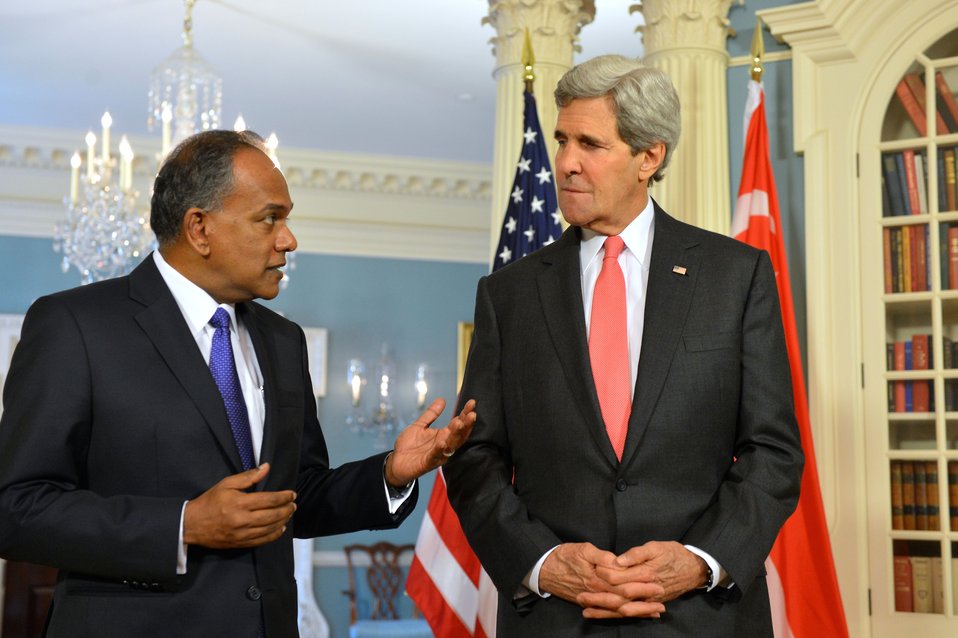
Secretary Kerry and Singaporean Foreign Minister K. Shanmugam Address Reporters

U.S. Secretary of State John Kerry and Singaporean Foreign Minister K. Shanmugam address reporters before their bilateral meeting at the U.S. Department of State in Washington, D.C., on May 12, 2014.